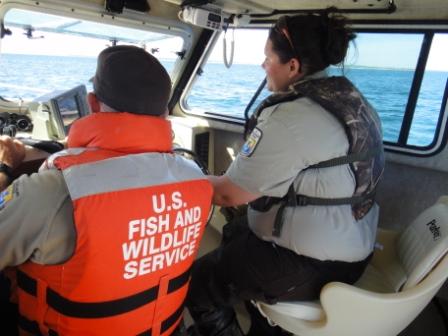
Law enforcement SCEP

U.S. Fish and Wildlife Service